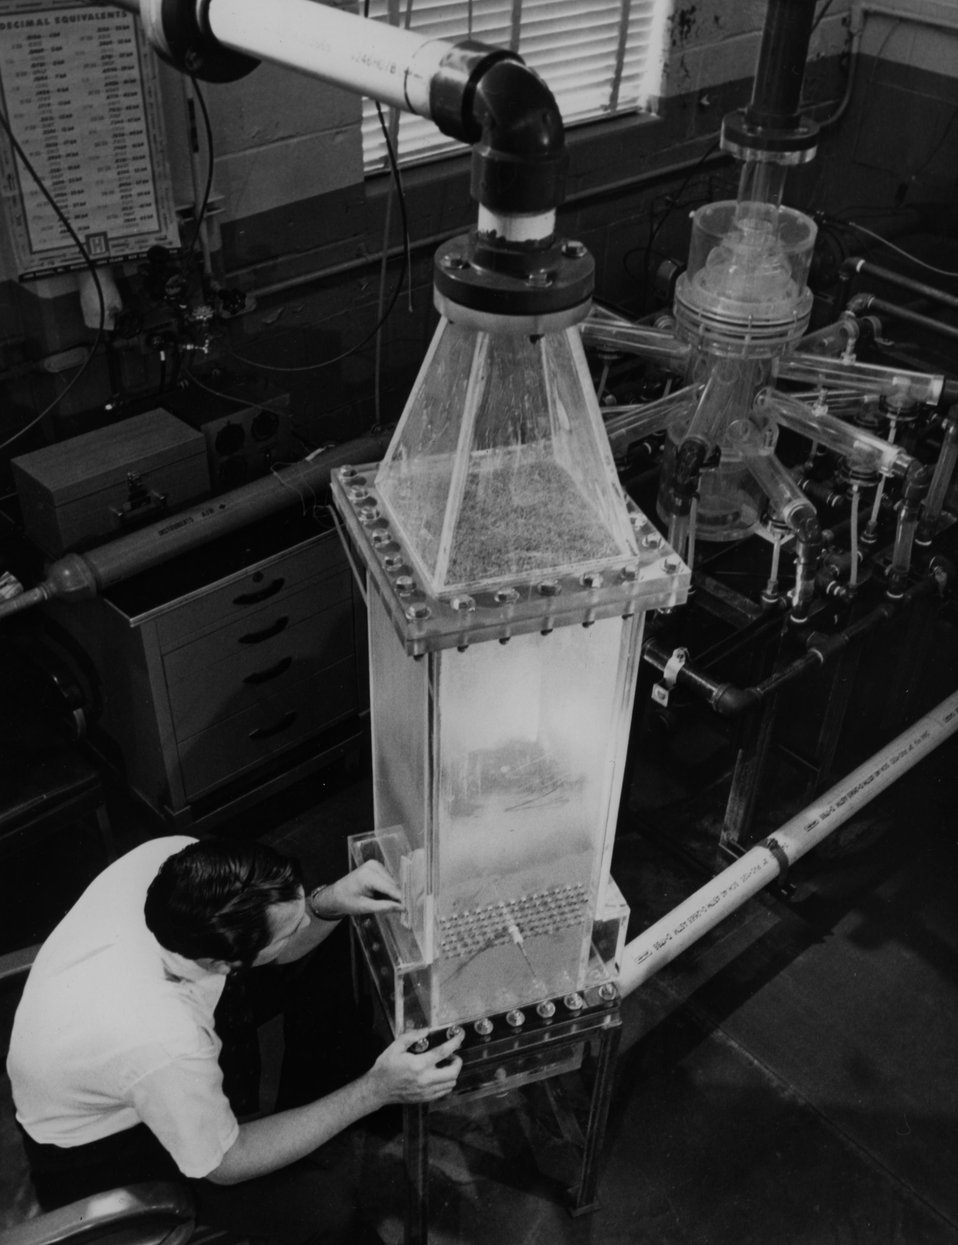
A system for the clean combustion of high sulfur coal for producing electric power is being developed at the Energy Research and Development Administration's Oak Ridge National Laboratory. c. 1976